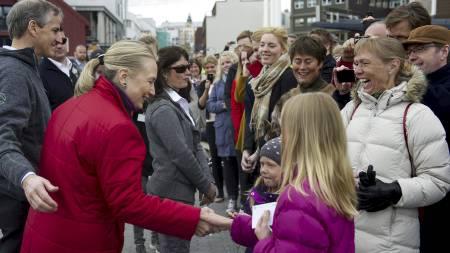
Secretary Clinton and Norwegian Foreign Minsiter Store Meet and Greet Norwegians in Tromso

U.S. Secretary of State Hillary Rodham Clinton and Norwegian Foreign Minister Jonas Gahr Store meet and greet Norwegians on the streets of Tromso, Norway, on June 1, 2012.